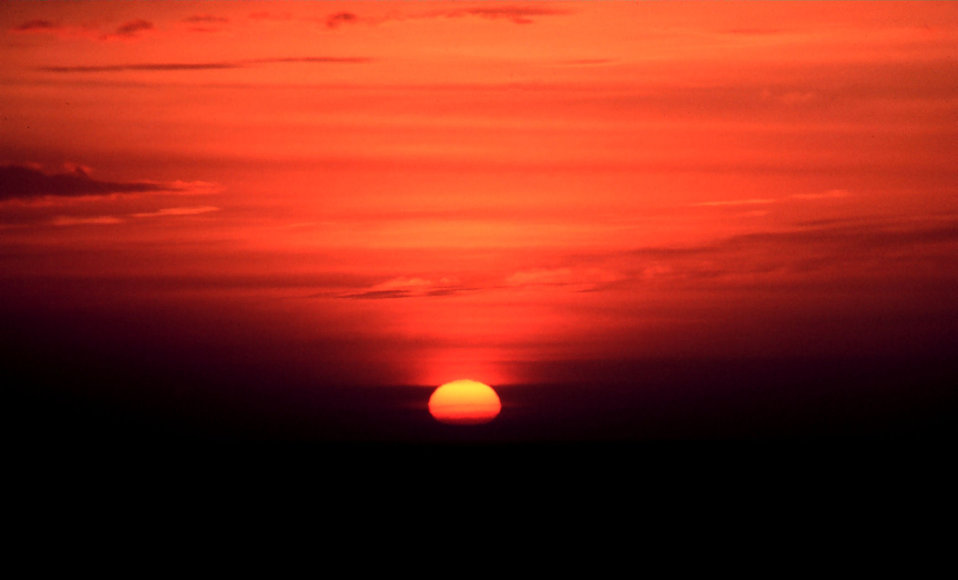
Sun approaching the horizon as the bottom limb is becoming obscured by far distant clouds.